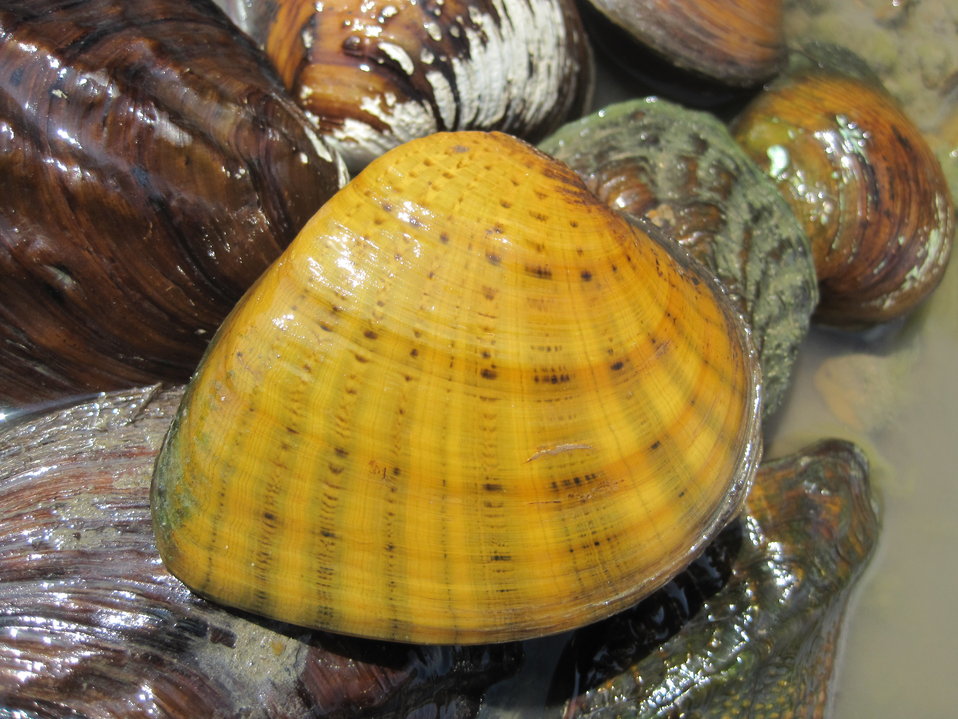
Butterfly Mussel

The Butterfly Mussel (Ellipsaria lineolata) is a brilliant yellow color with brown stripes. This specimen was counted in an October Mussel Population Survey in Kansas' Marais des Cygnes River in 2011.